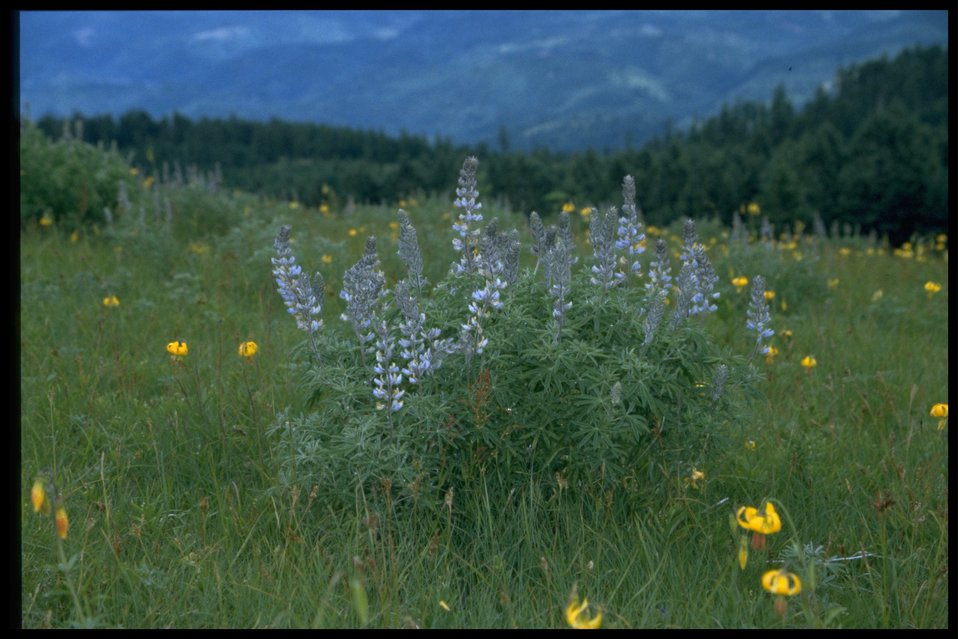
Farshot of lupine (genus Lupinus).